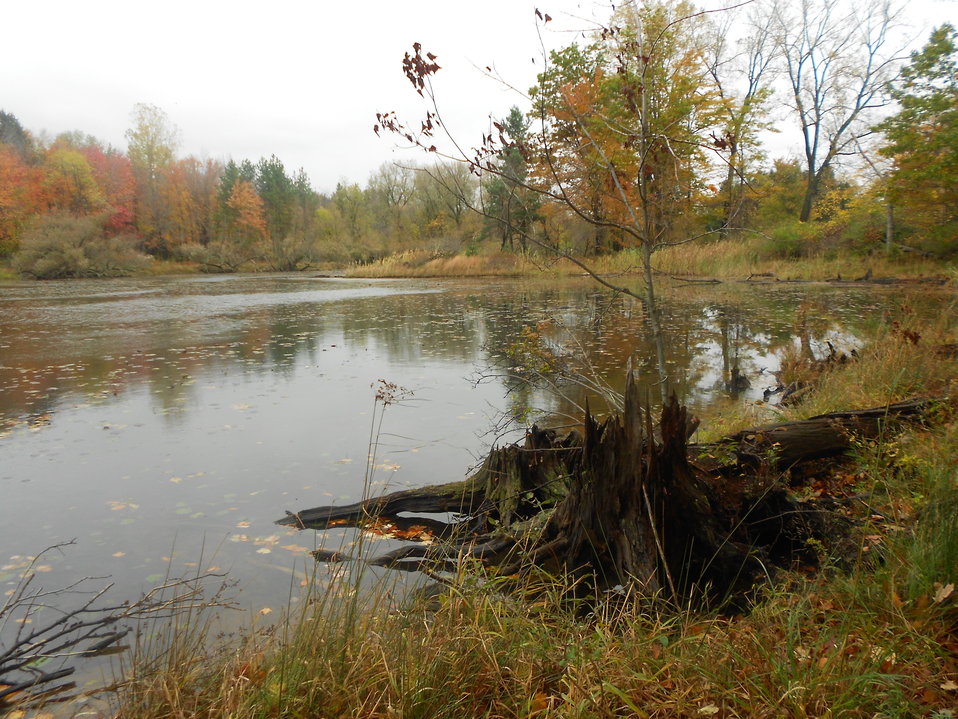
Pond at Reinstein Woods Nature Preserve

Lily pond in the early autumn